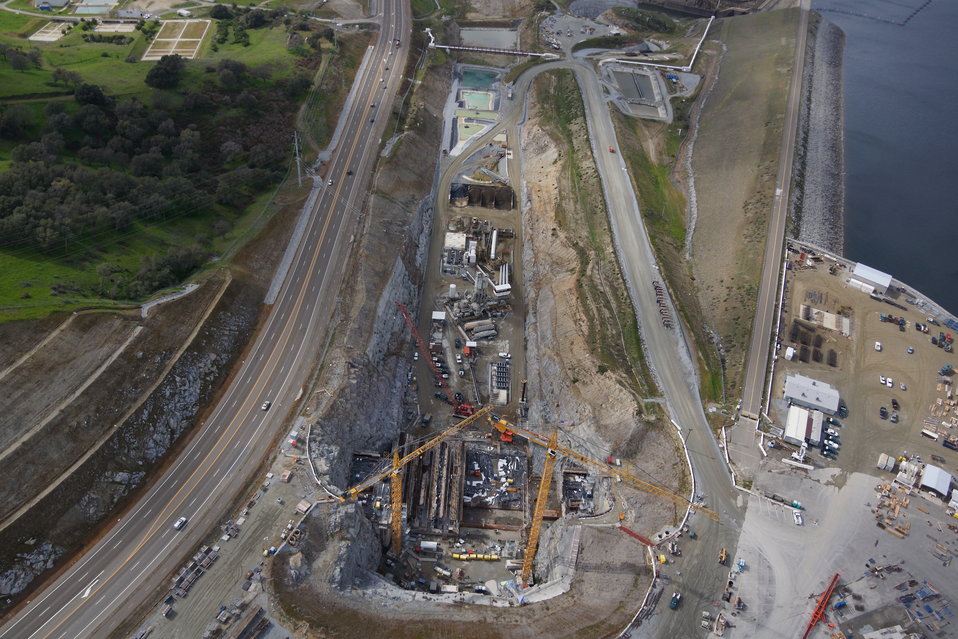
Aerial View of Folsom Dam Auxiliary Spillway

An aerial view shows the entire construction site of the Folsom Dam auxiliary spillway March 6, 2013. Excavation began in 2011 to remove 3.5 million cubic yards of rock and soil from the site. In 2012, the first steel and concrete were placed for the control structure—essentially a second dam—that will stand as tall as the Statue of Liberty when completed. The completed dam and chute will include 350,000 cubic yards of concrete, enough to line up concrete trucks from Sacramento to Los Angeles, and 24 million tons of steel, enough to build two Eiffel Towers. The project is estimated to be completed by October 2017 and is one piece of a larger plan to help the Sacramento region reduce the risk of flooding to a one-in-200 chance for flooding in any given year.